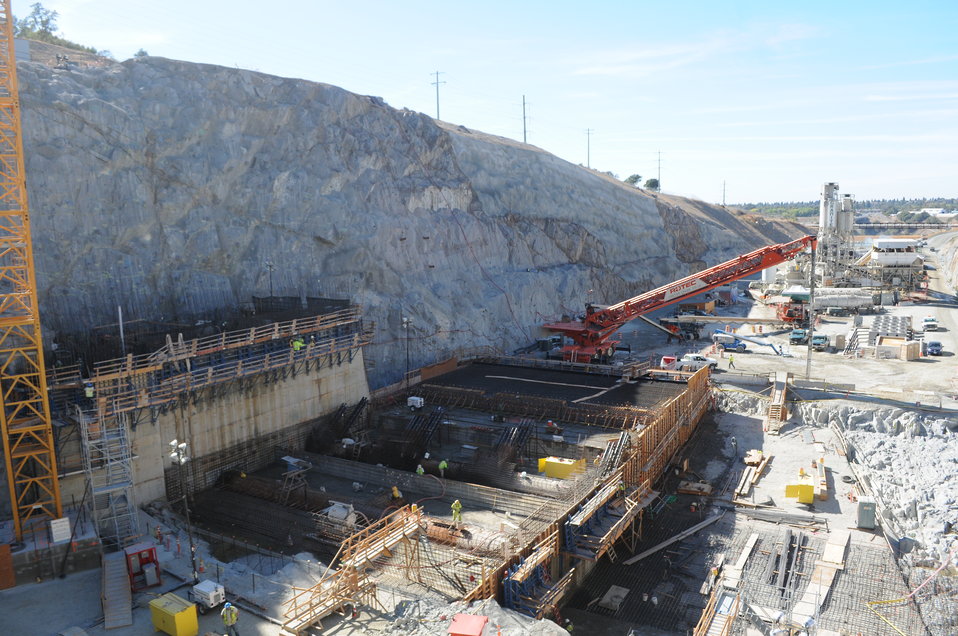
House of Rep. staff member visits Folsom Dam Project

View of the rising concrete monoliths (foreground) that will become the Folsom Dam auxiliary spillway at the construction site in Folsom, Calif., Oct. 19, 2012. The concrete used for the construction of the auxiliary spillway is processed on location at the processing plant (upper right). The U.S. Army Corps of Engineers in cooperation with the U.S. Bureau of Reclamation, the Central Valley Flood Protection Board, and the Sacramento Area Flood Control Agency, are building the spillway to improve the safety of the existing dam and reduce flood risk for the greater Sacramento area.